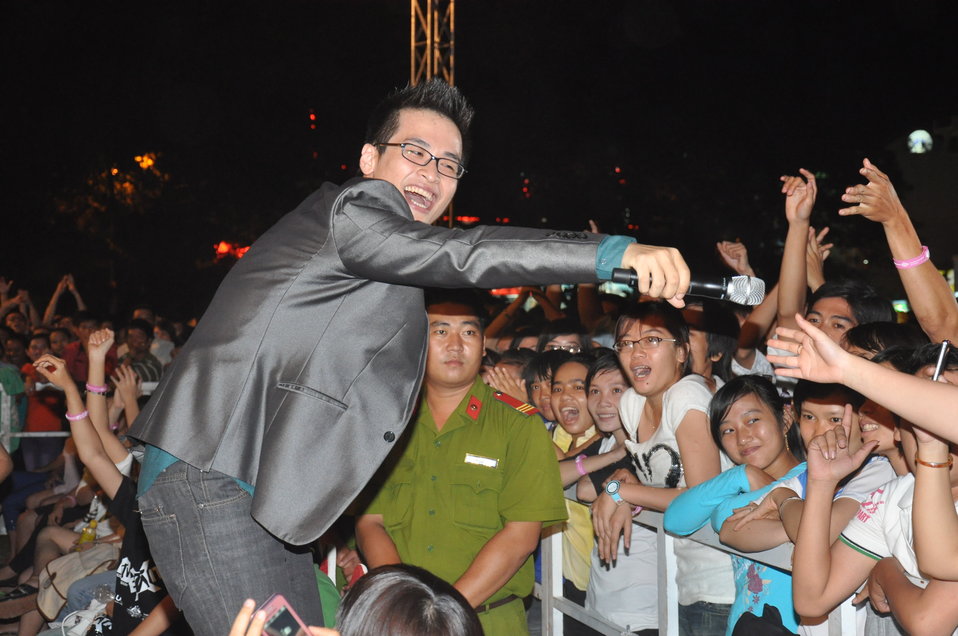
USAID and MTVEXIT concert in Can Tho

Concert in Can Tho against human trafficking, April 10, 2010